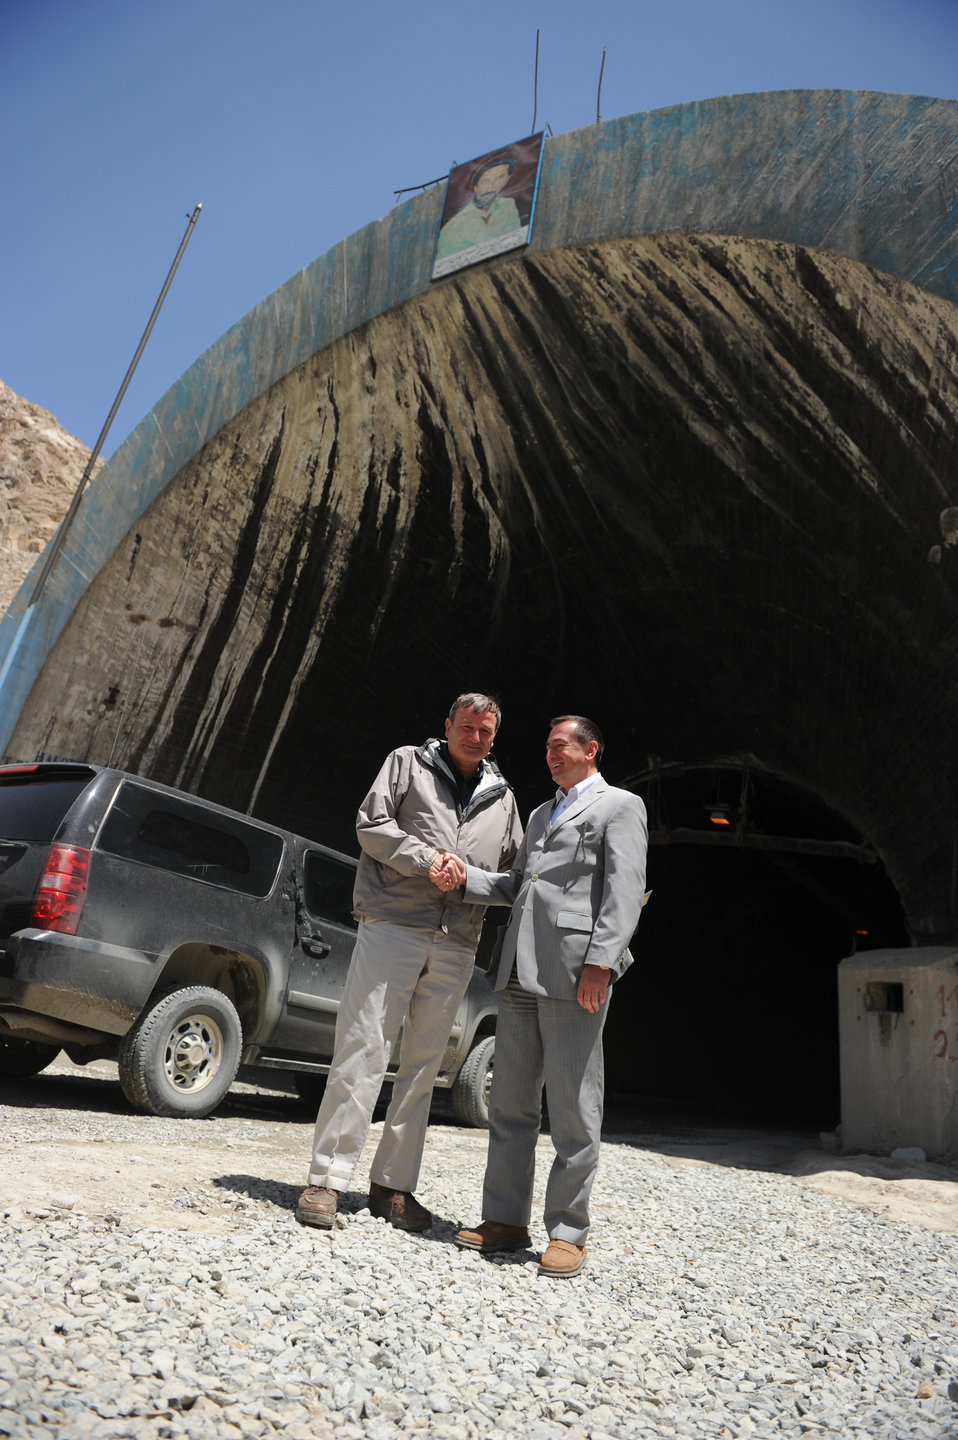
Russian Ambassador Andrey Avetisyan and U.S. Ambassador Karl W. Eikenberry attend a ceremony to mark the beginning of renovations at the Salang Tunnel on the border of Parwan and Baghlan Provinces, Afghanistan, on Wednesday, June 15, 2011. (S.K.Vemmer/Department of State)